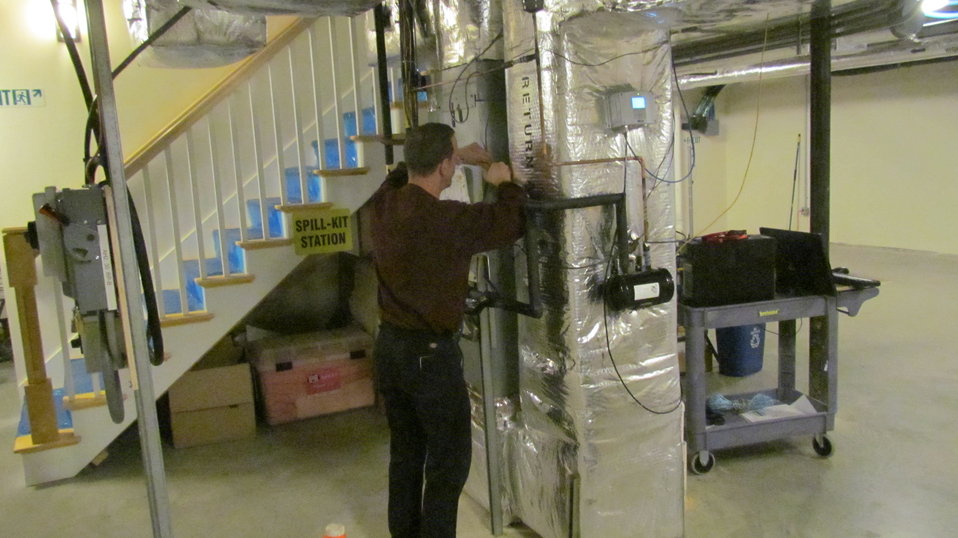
Technician installing instrumentation used to monitor performance of heat pump/air-conditioning unit.